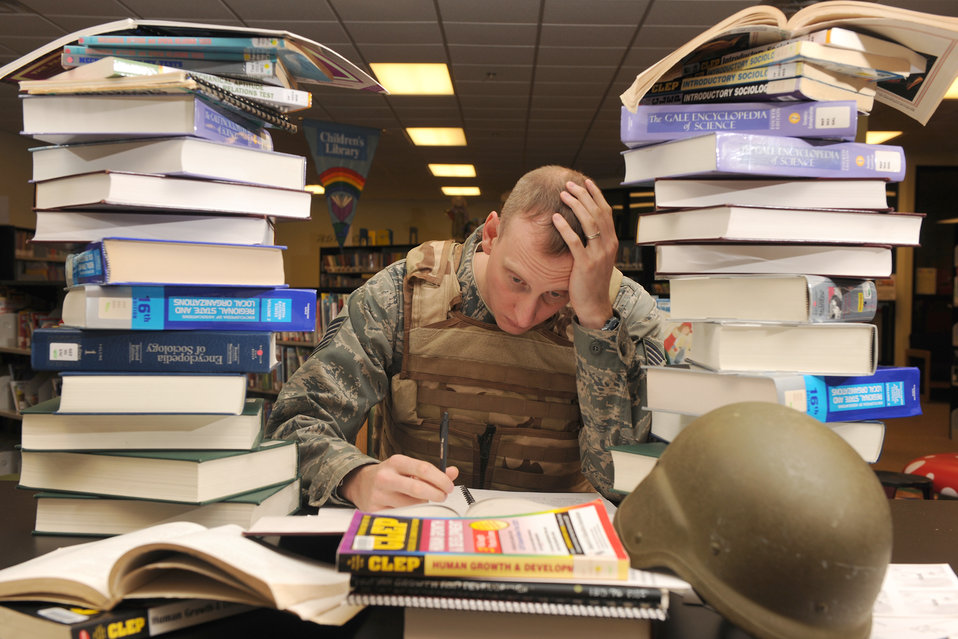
Operation CCAF Blitz targets technical sergeants

The ongoing Operation CCAF Blitz campaign encourages technical sergeants to earn their Community College of the Air Force associate's degree so they can have the senior rater endorsement on enlisted performance reports. Education center officials provide many resources for helping them finish their associate's degree, including College Level Examination Program tests and on-base classes.